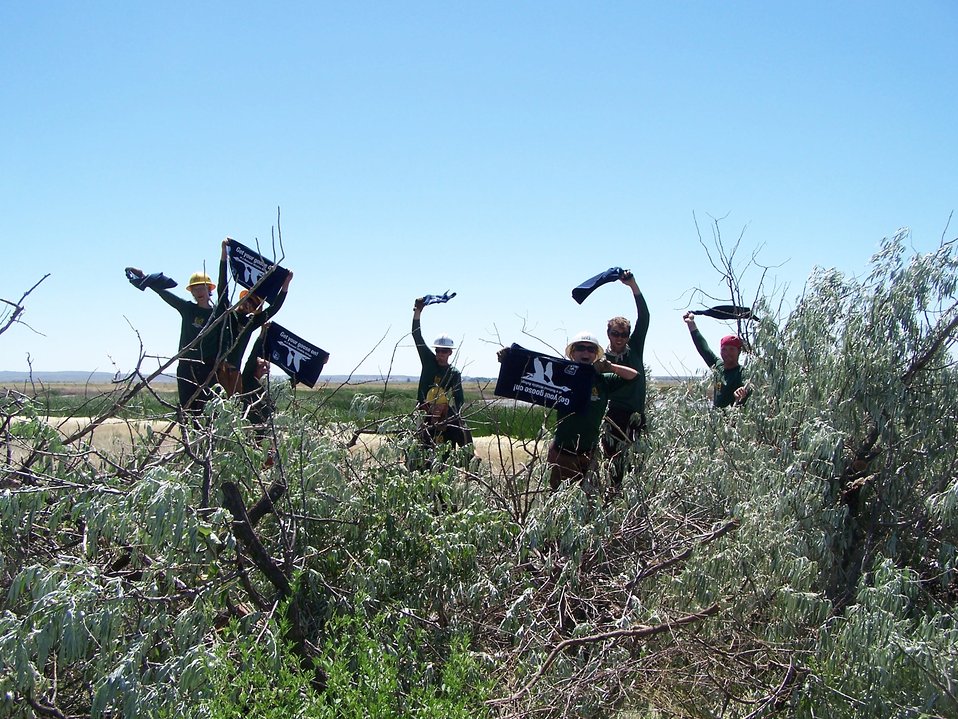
Get Your Goose On! - While Battling Invasive Species

Bowdoin NWR's MCC crew Got Their Goose On after cutting down invasive Russian Olives